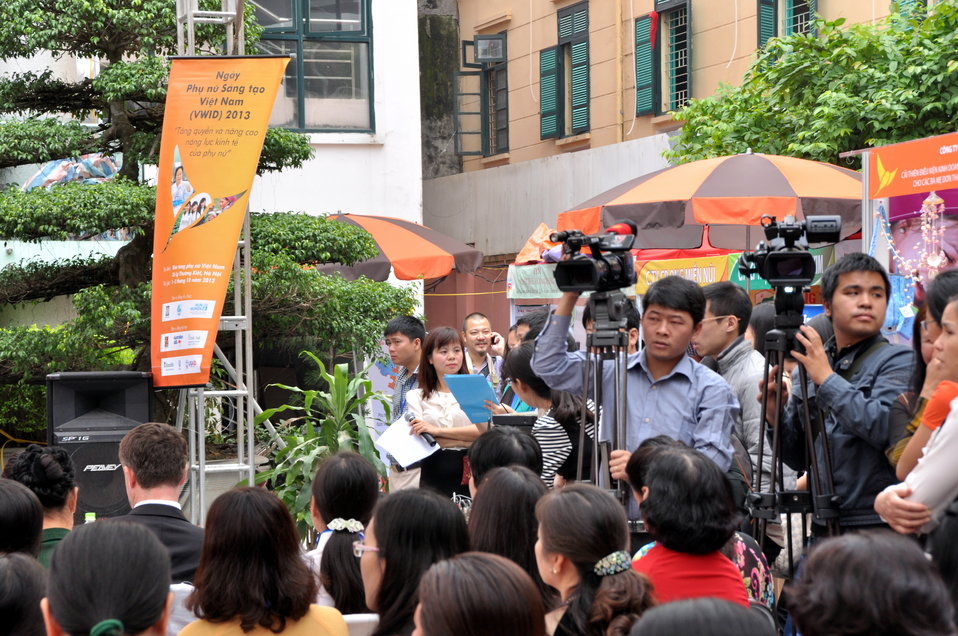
Vietnam Women Innovation Day 2013

Hanoi, October 1, 2013.